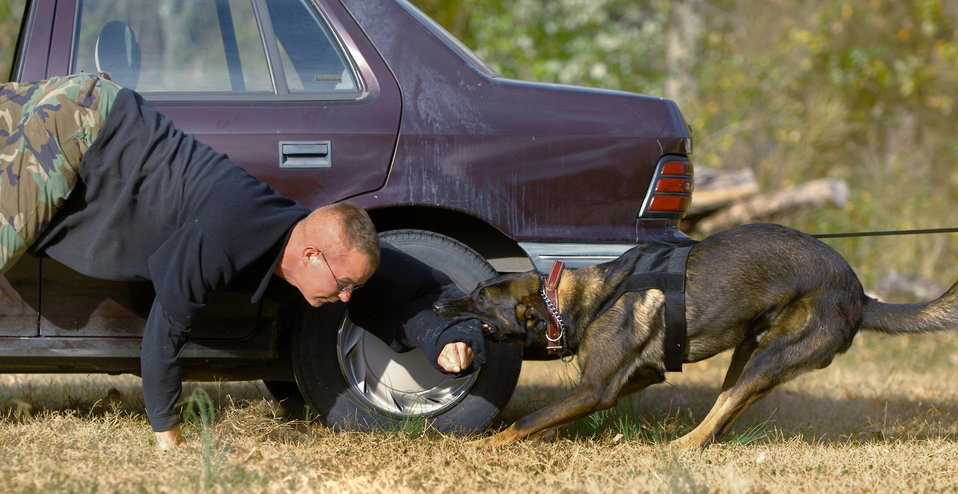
Nice doggie

LANGLEY AIR FORCE BASE, Va. (AFPN) -- Harry, a Dutch shepard, drags Staff Sgt. Brian Wilson out of a car during a training exercise. The 1st Security Forces Squadron dog handler and Harry -- and other squadron Airmen -- trained Nov. 16 on the procedures security forces use during a high-risk traffic stop. Harry is one of 10 squadron working dogs going through the training.